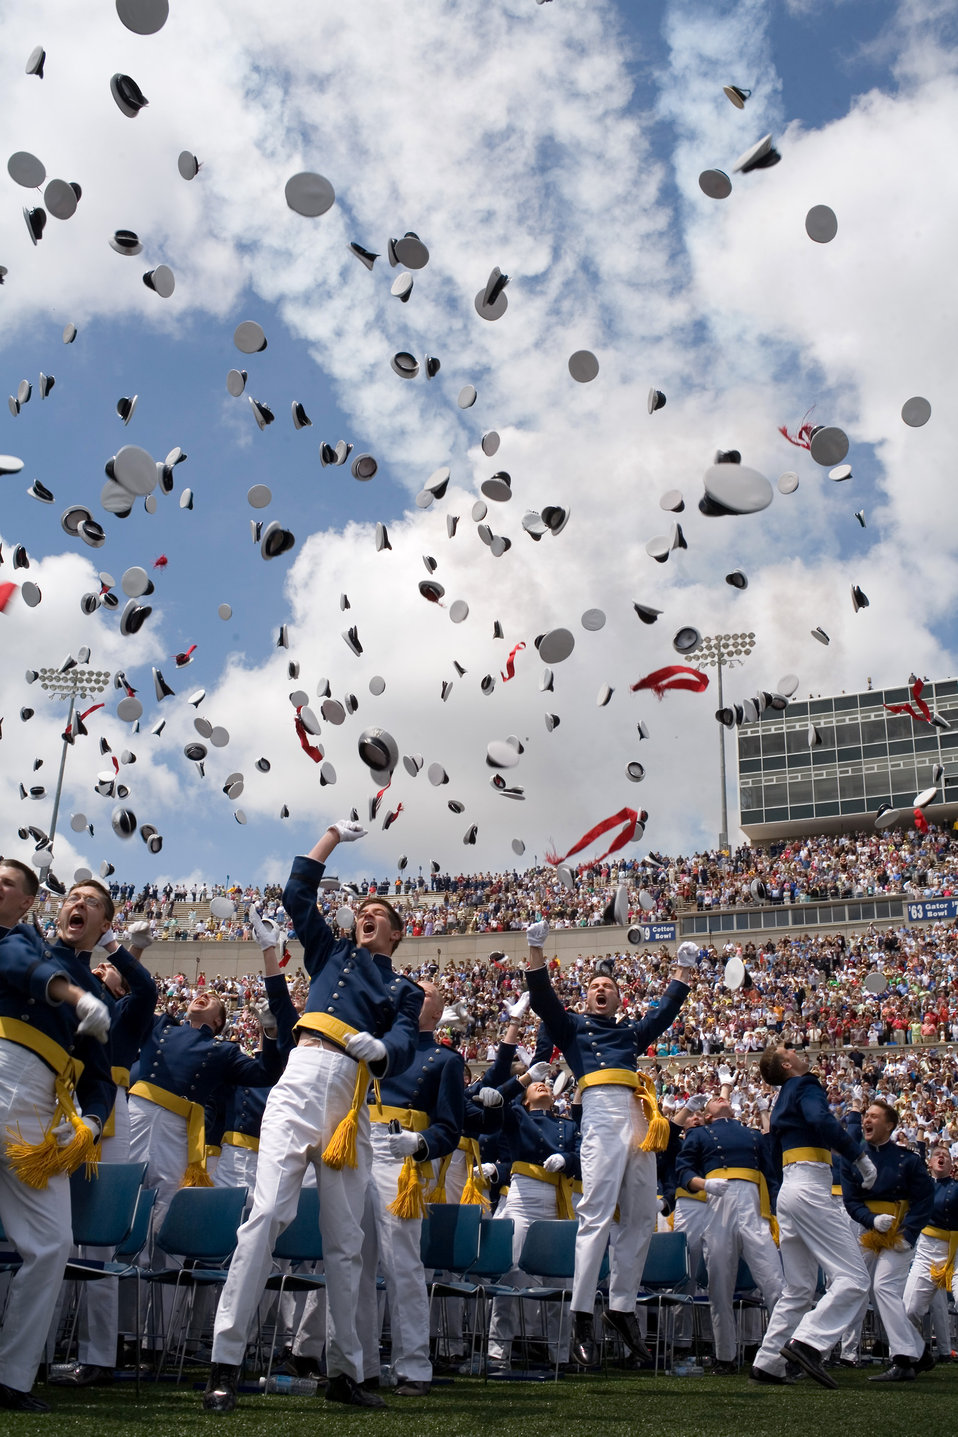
Rumsfeld voices confidence in academy graduating class

Newly commissioned second lieutenants toss their hats skyward at the conclusion of the U.S. Air Force Academy's 2006 graduation ceremony in Colorado Springs, Colo., on Wednesday, May 31, 2006. The Class of 2006 totaled 879 graduates, with 491 of them slated for undergraduate pilot training. Secretary of Defense Donald H. Rumsfeld was the guest speaker at the commencement.